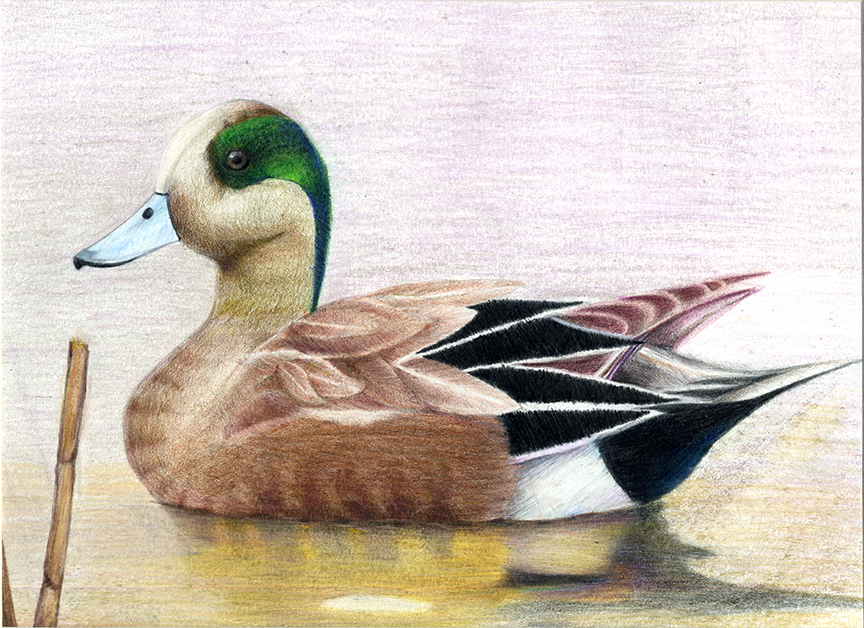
JRDuck2013MI

2013 Junior Duck Stamp Best of Show-Michigan